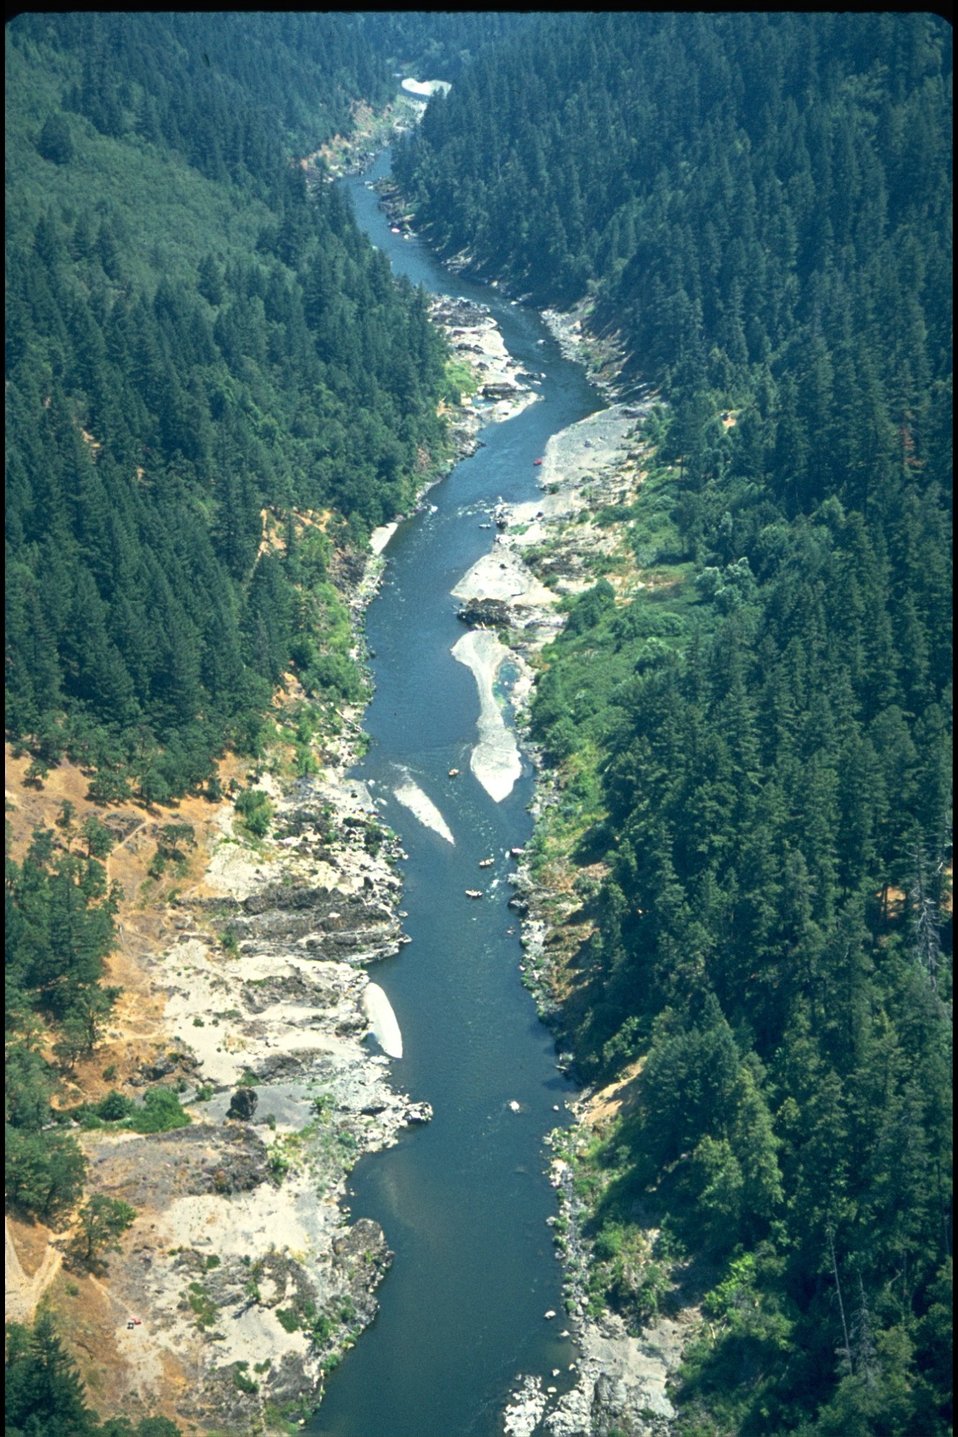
Rogue River - Quail Creek, wild section.